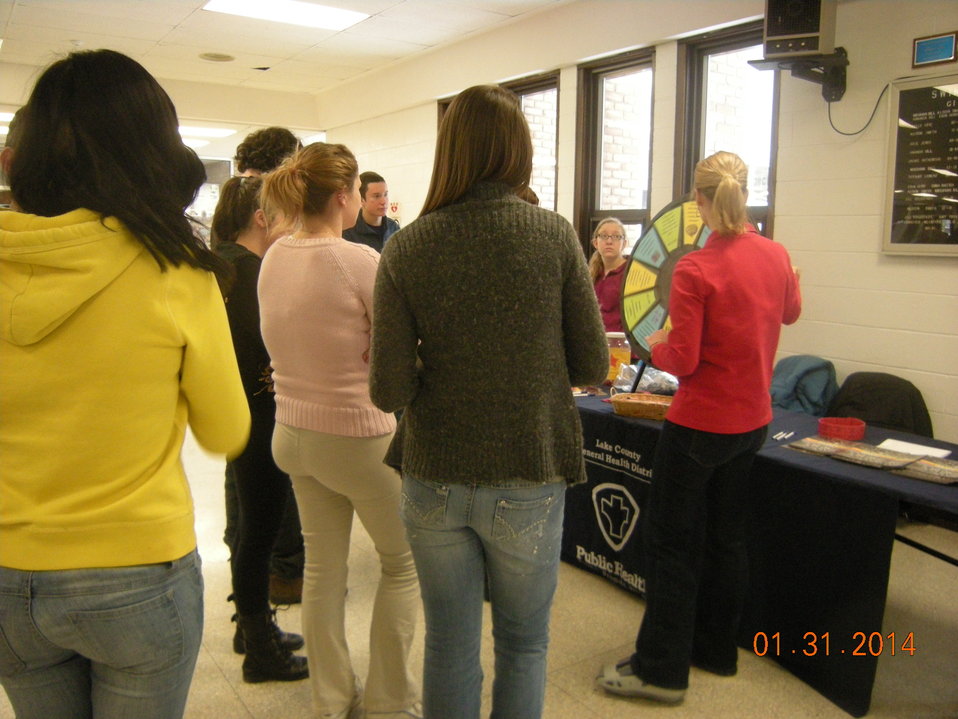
NDFW events held at Madison High School in Ohio on January 31st

This was a partnership between the high school and the Lake County General Health District. Students spun the wheel and answered questions based on information in the Dispel the Myths booklet and those finding the correct answers were entered to win a gift card. It turned out to be a fun day!